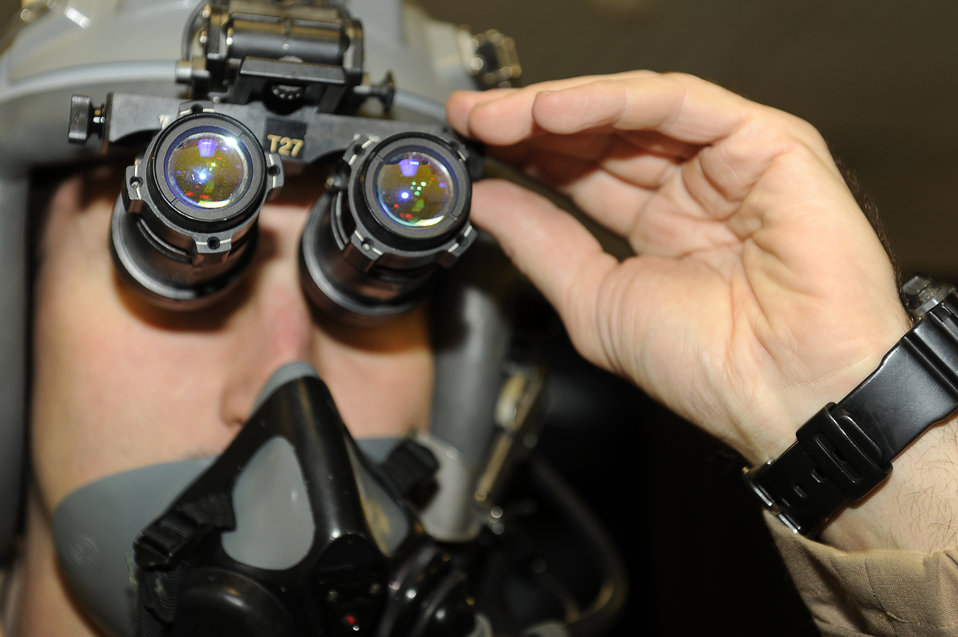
Airmen prepare for night mission at Bagram

Capt. David Snodgrass, 79th Expeditionary Fighter Squadron, checks his night vision goggles before his flight Jan. 4, 2010, at Bagram Airfield, Afghanistan. Captain Snodgrass is from Fort Worth, Texas and is deployed from Shaw Air Force Base, S.C.